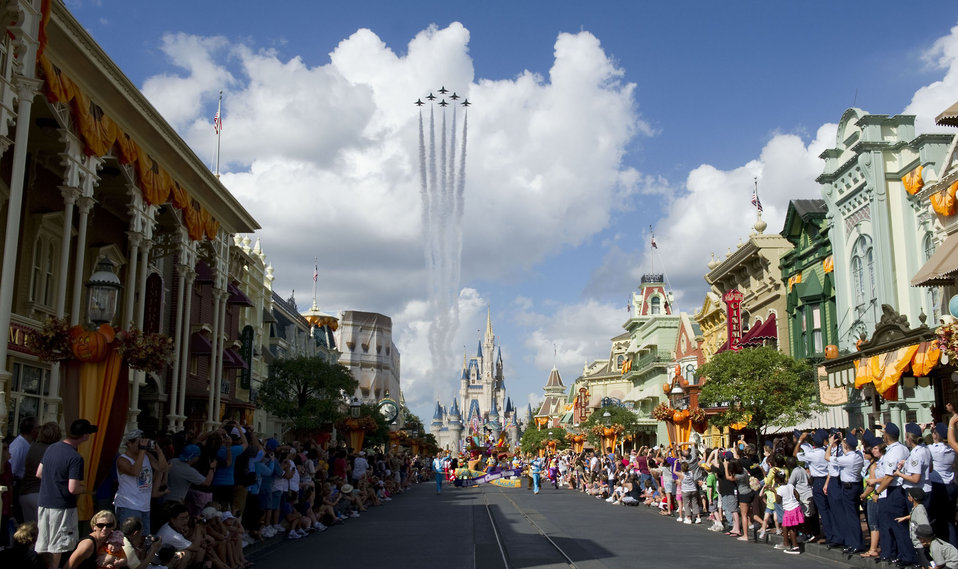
Thunderbirds over Fantasyland

The Thunderbirds, the U.S. Air Force air demonstration team, fly the delta formation over Cinderella’s Castle Oct. 26, 2010, at Disney World in Orlando, Fla. The theme park dedicated an entire day of events to Air Force servicemembers and their families during Air Force Week Cocoa Beach.